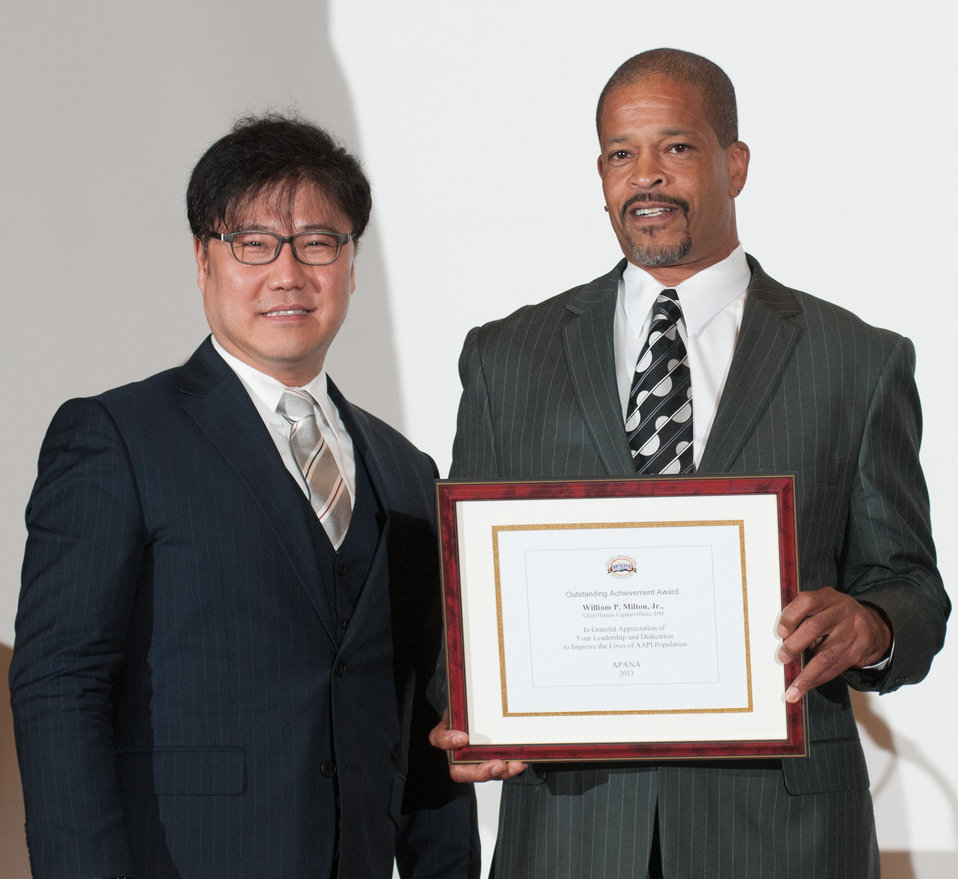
Asian Pacific American Network in Agriculture (APANA) President Justin Rhee, left, presents an “Outstanding Achievement Award” for leadership and dedication to improve the lives of the Asian Americans and Pacific Islander (AAPI) population, to U.S. Department of Agriculture’s (USDA) Chief Human Capital Officer William P. Milton, Jr., right, during the USDA Asian Pacific American Heritage Month Observance, at the USDA headquarters in Washington, D.C., on Thursday, May 23, 2013. This year’s theme is “Building leadership; Embracing the Cultural Values and Inclusions.”